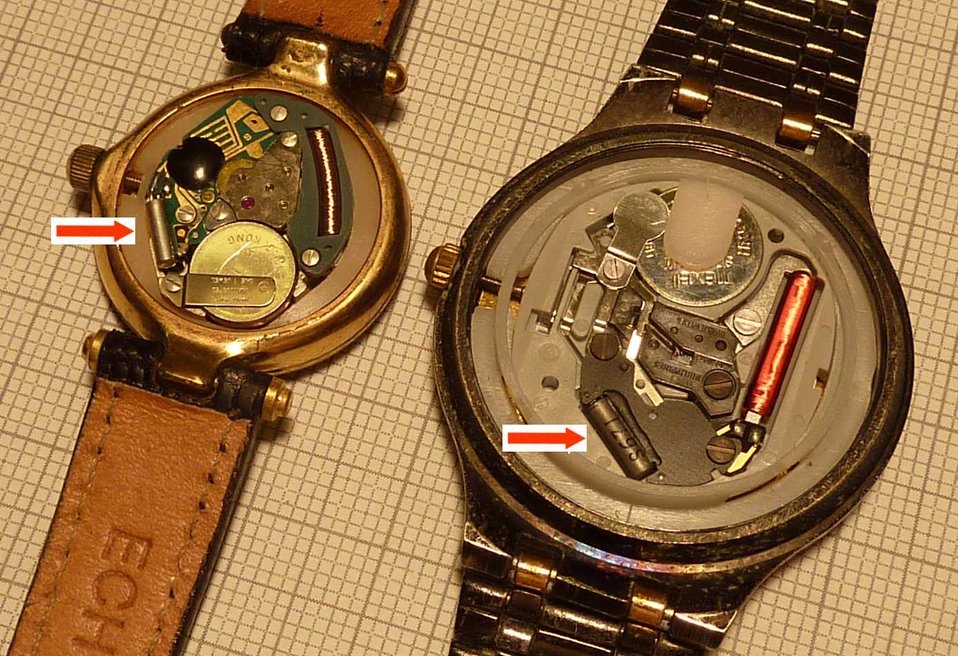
Deutsch: Uhrenquarze in 2 Armbanduhren Two quartz watches with their case backs removed, showing works. The arrows point to the quartz crystal resonator units, which keep time for the watches.